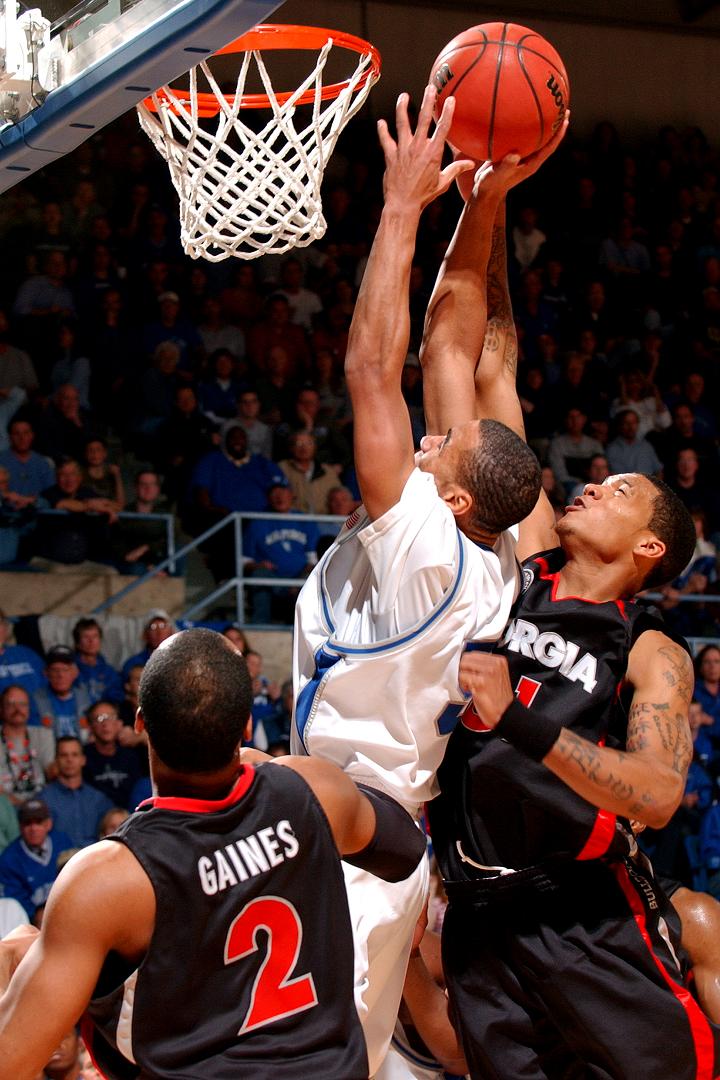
Falcon forwards march over Georgia in NIT

Air Force guard Matt McCraw is fouled by Georgia guard Billy Humphrey on his way to the basket March 19 in the second round of the National Invitation Tournament at the Air Force Academy's Clune Arena. With their 83-52 win over Georgia, Air Force set a school record for wins in a season at 25.